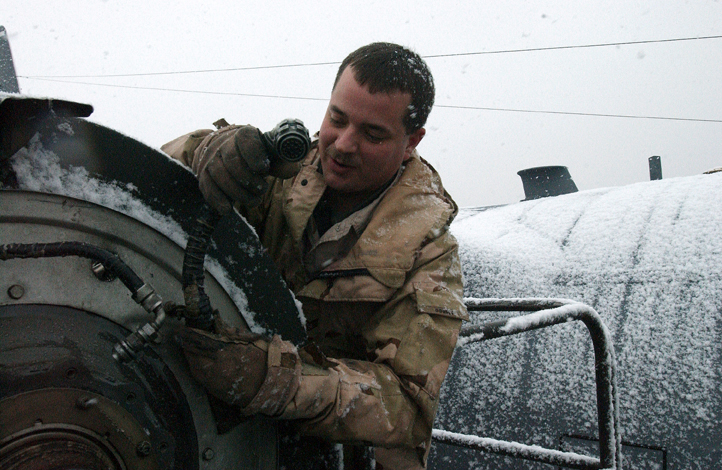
Maintainers make 'maintenance magic'

KARSHI-KHANABAD AIR BASE, Uzbekistan -- Staff Sgt. Michael Godbey changes a C-130 Hercules propeller in the snow here. Because the base's maintainers have no hangars for maintenance, repairs must be done when and where they are needed. Sergeant Godbey is a maintainer with the 416th Air Expeditionary Group here. Maintainers have helped the 744th Expeditionary Airlift Squadron maintain a 100 percent mission accomplishment rate for the past four months.